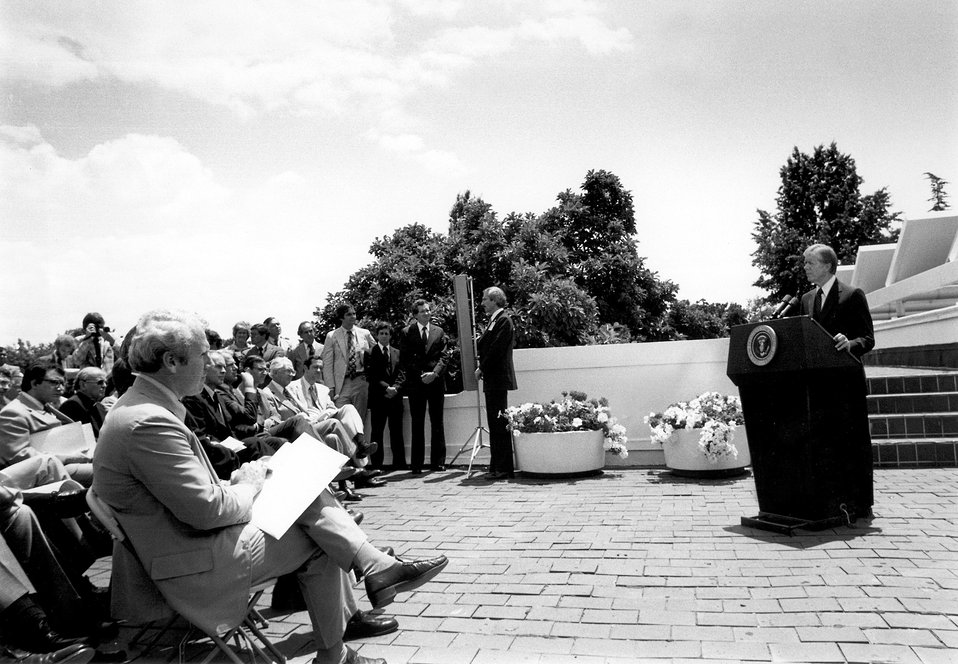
President Carter dedicates solar installation at the White House in Washington, D.C. June 20, 1979.